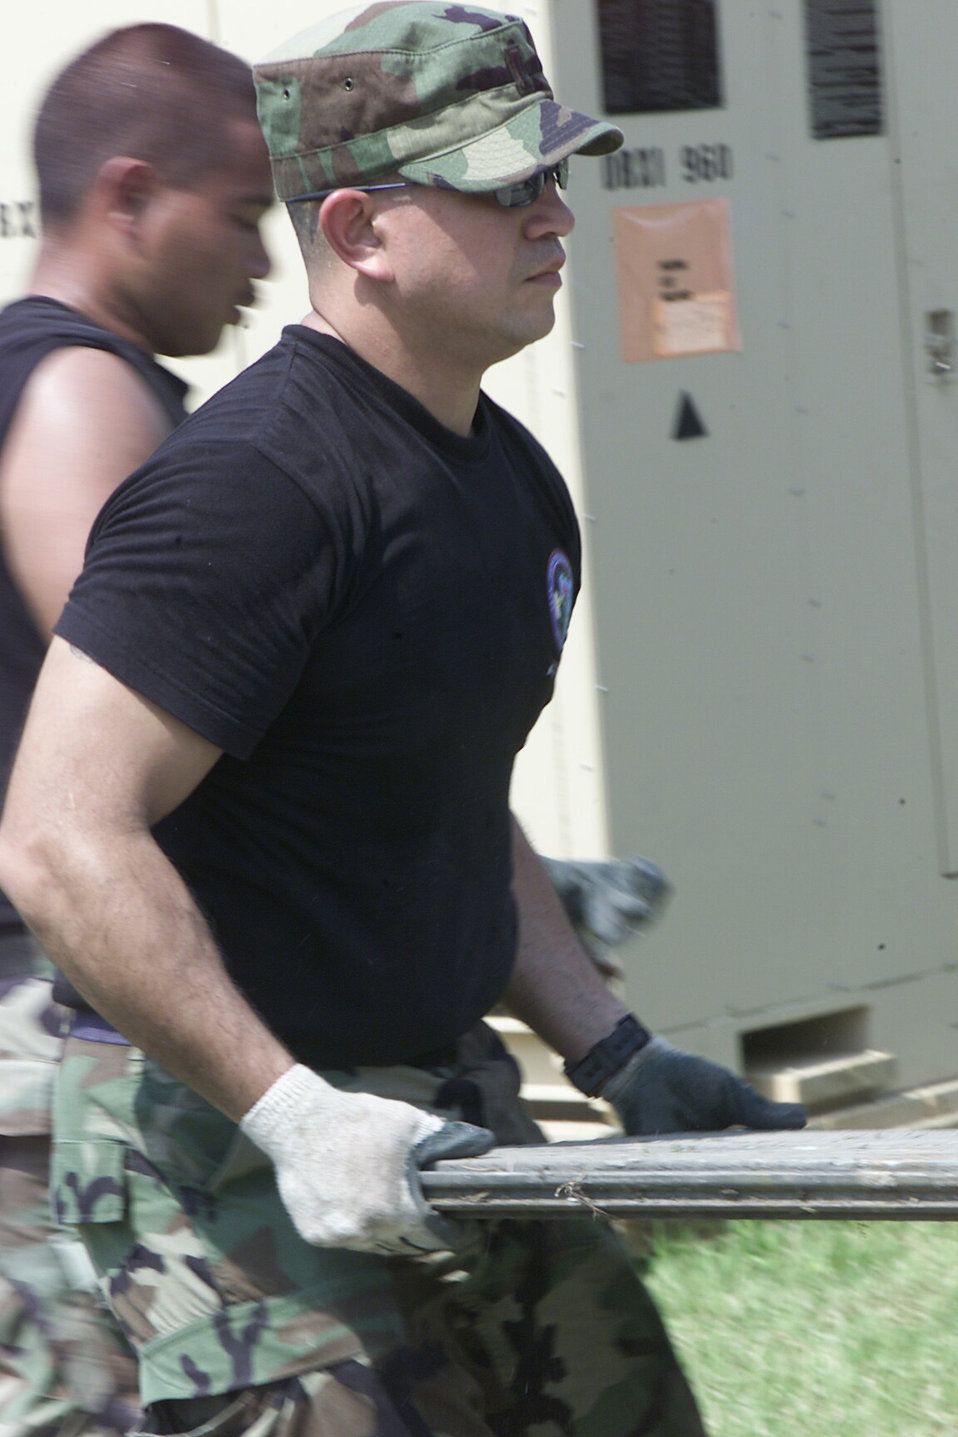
We built this city

GWANGJU AIR BASE, South Korea -- Civil Engineer personnel lay down an A-2 matting inside tent city. The matting is for vehicles to drive on inside the tent city compound.